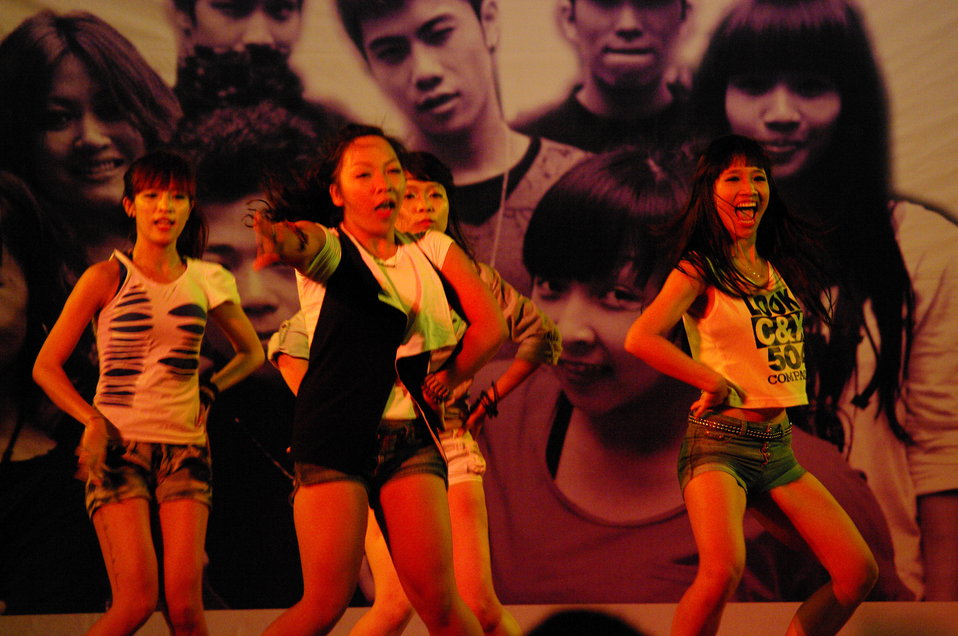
PEPFAR Sponsors Hip Hop to Stop the Spread of HIV